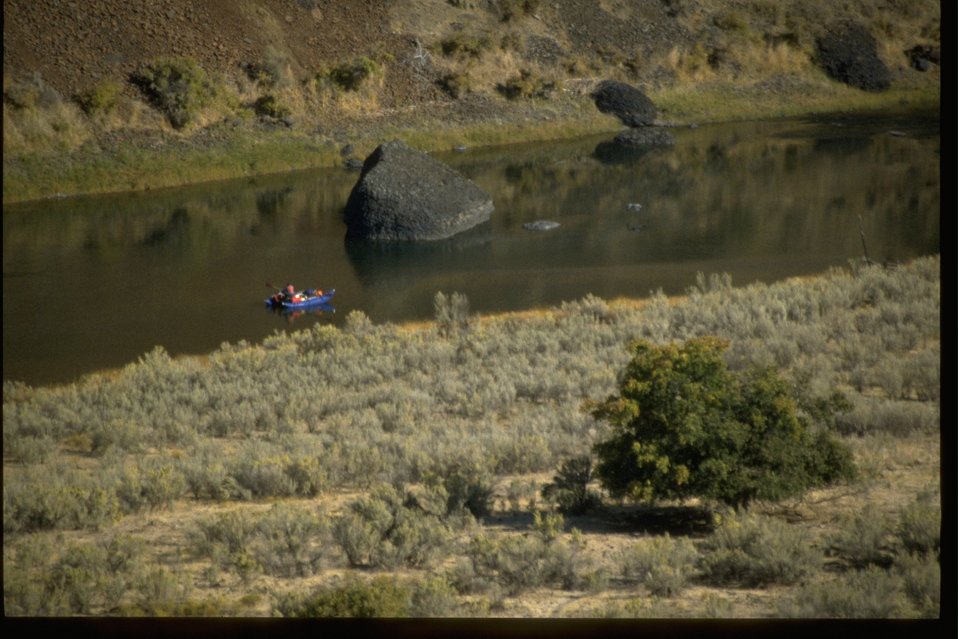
Photo in a seven series collection of a rafter on the John Day River. Approaching a large rock island and a heron in flight.